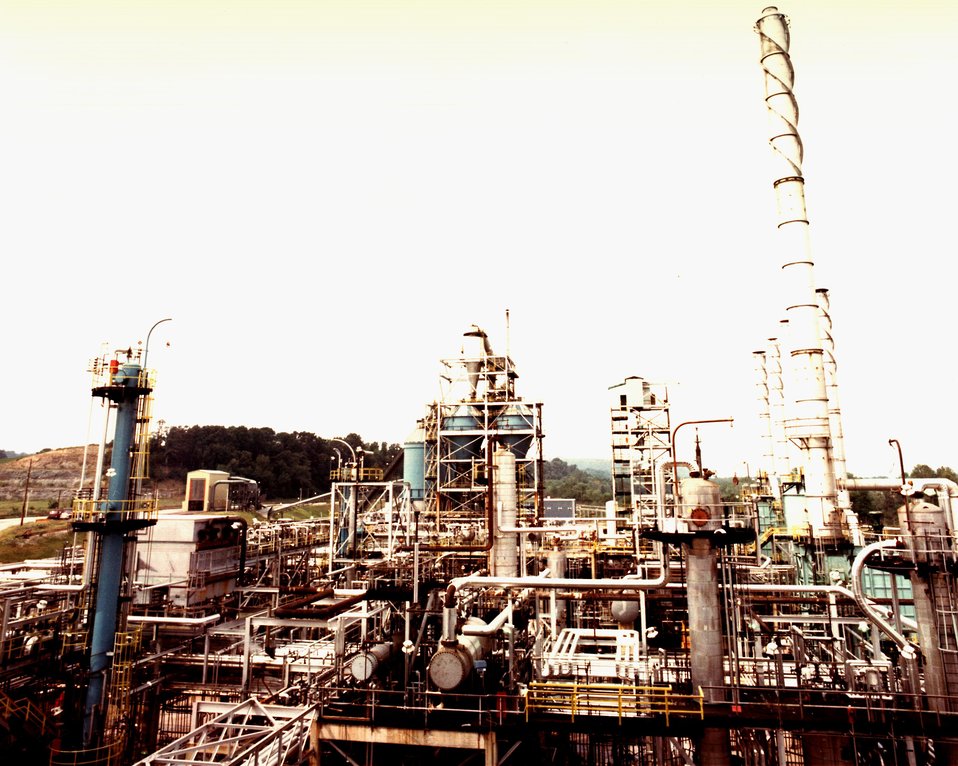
GENERAL VIEW OF THE HYDROGENATION AREA.